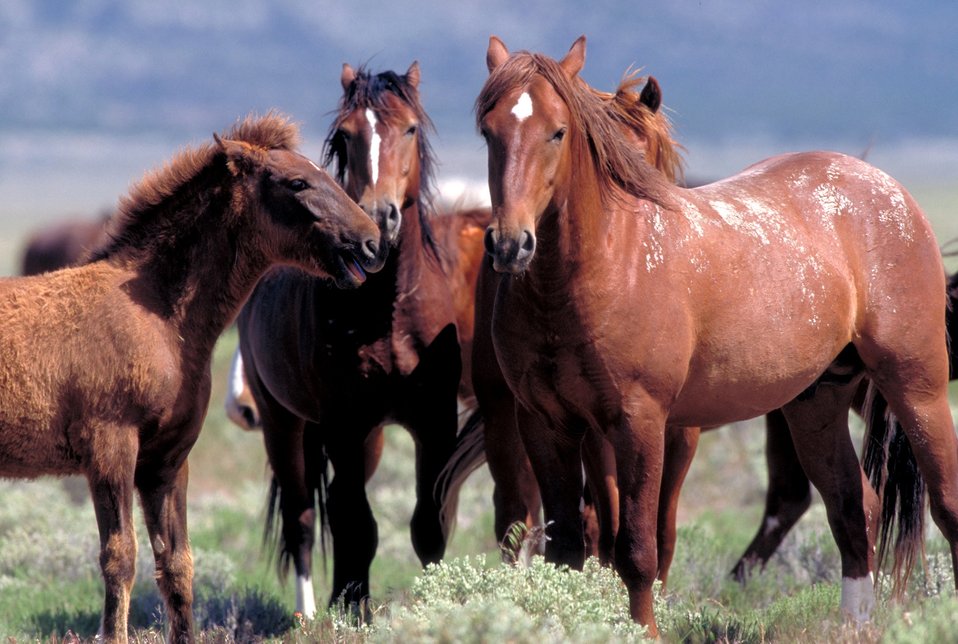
Onaqui Herd near Dugway, Utah.